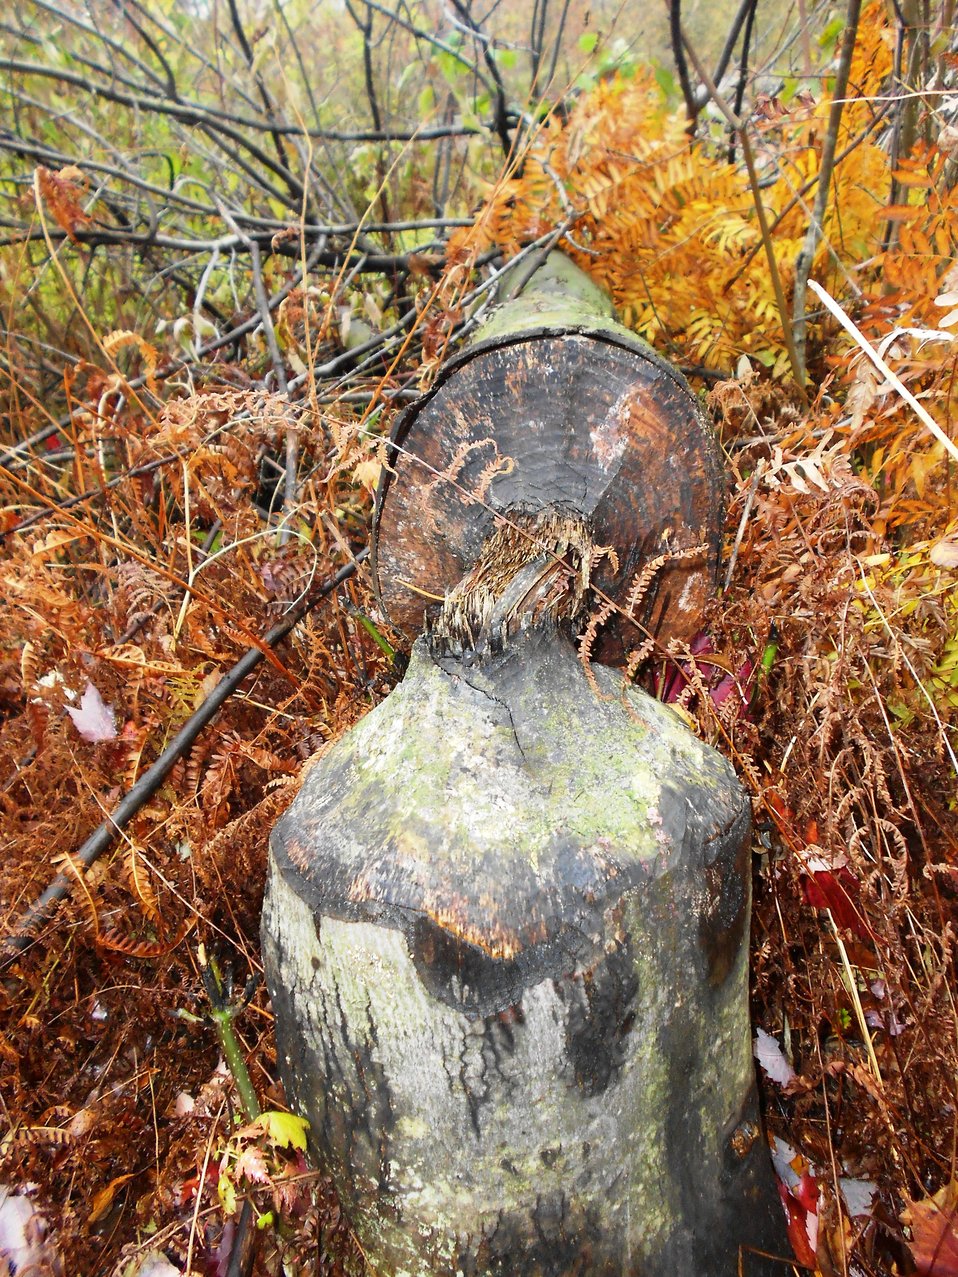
A beaver-cut tree

A fallen tree cut down by a beaver